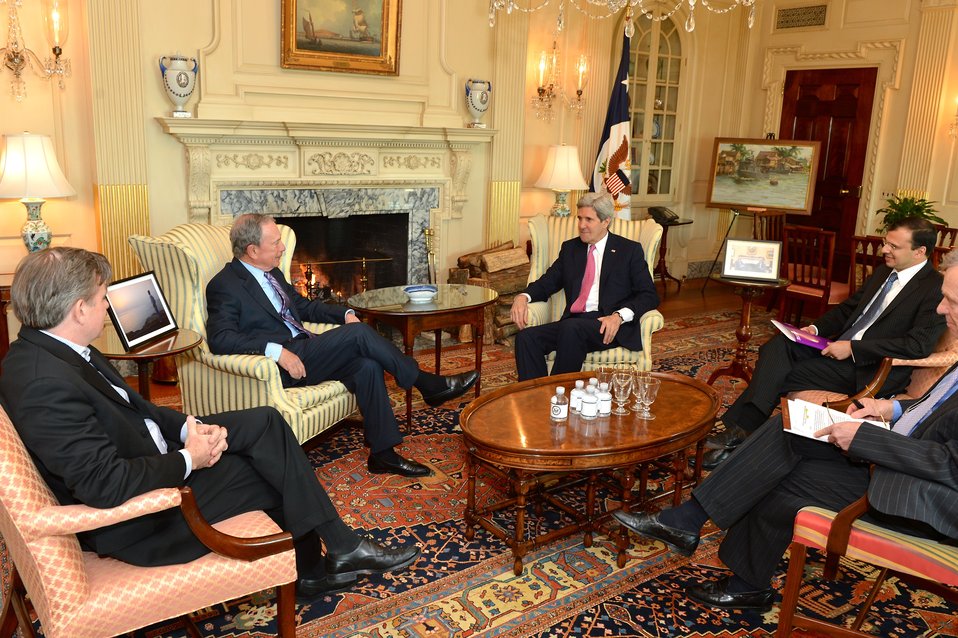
Secretary Kerry Meets With UN Special Envoy Michael Bloomberg

U.S. Secretary of State John Kerry Kerry meets with UN Special Envoy for Cities and Climate Change Michael Bloomberg at the U.S. Department of State in Washington, D.C., on February 27, 2014.